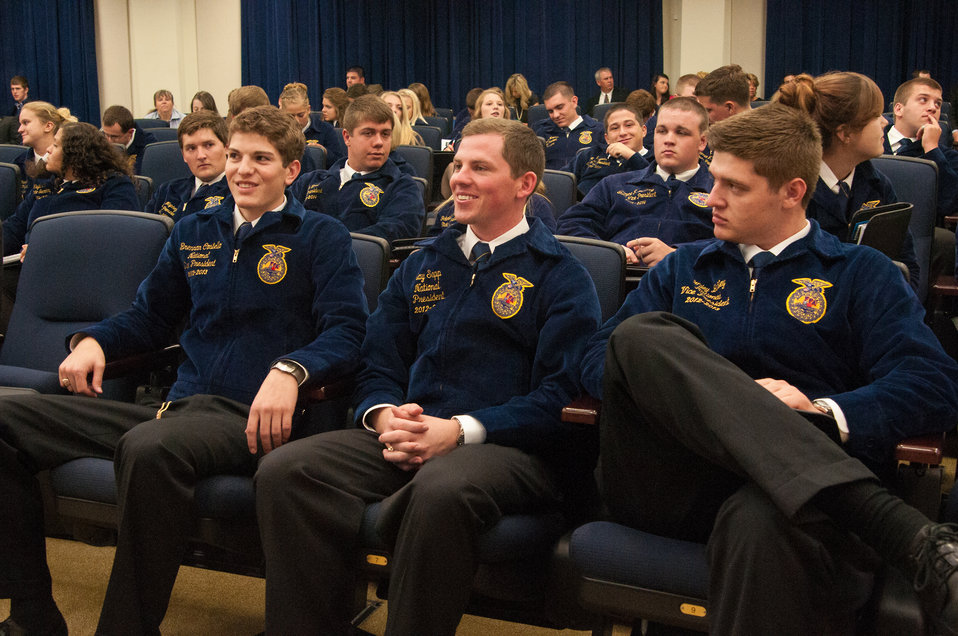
(L to R) FFA National Vice President Central Region Brennan Costello, FFA National President Clay Sapp, and FFA National Vice President Southern Region Wiley Bailey listen to Agriculture Secretary Tom Vilsack speak at a meeting of the White House Rural Council to an audience of the National State President’s Conference of the FFA on Wednesday, Jul. 24, 2013 in Washington, D.C. Secretary Vilsack took questions from the audience and discussed international, national and agricultural production topics with the FFA State President’s.